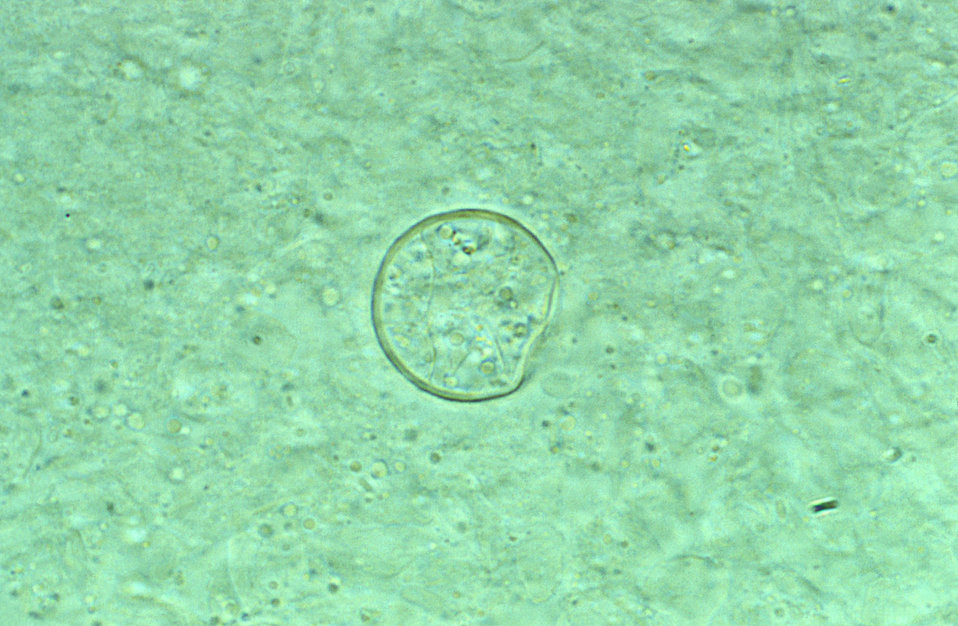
This photomicrograph revealed some of the histopathologic characteristics found within a pus specimen, which was prepared using potassium hudroxide (KOH), and which had been harvested from a skin lesion in a case of cutaneous coccidioidomycosis. In this particular specimen you'll note the chlamydospore, or spherule of a Coccidioides immitis fungal organism. As the reproductive structure of this, as well as other types of fungi, this spherule is also known as a chlamydoconidium, and contains the organism's endospores.